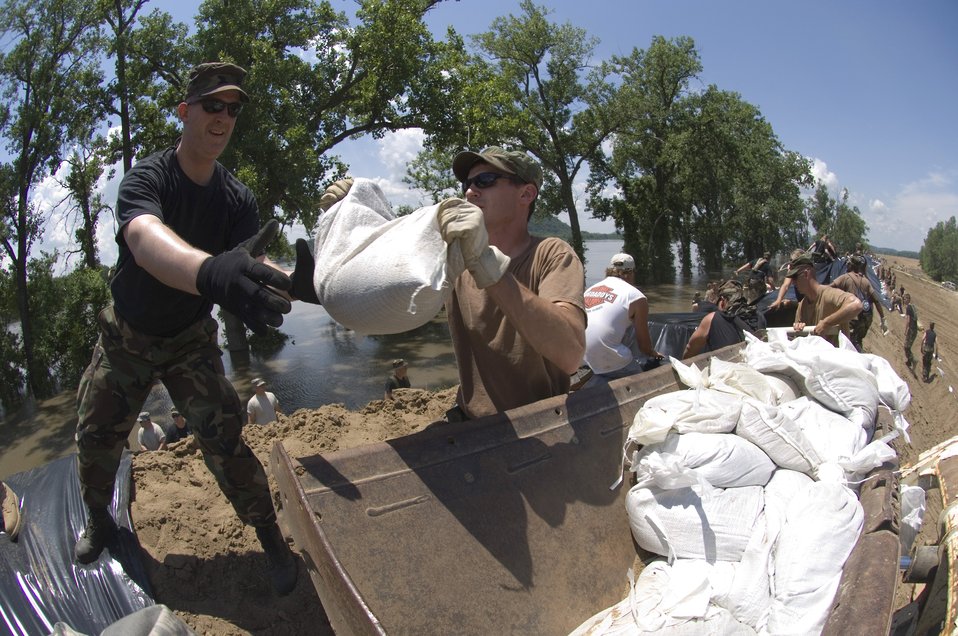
Illinois Air National Guard provides help

Master Sgts. Brexton Hall (right) and Paul Butts unload sand bags used to hold large sheets of plastic in place on the reinforced levees along the Mississippi River June 19 near Pleasant Hill, Ill. Sergeants Brexton and Butts are both Air National Guardsman assigned to the 183rd Fighter Wing in Springfield, Ill.